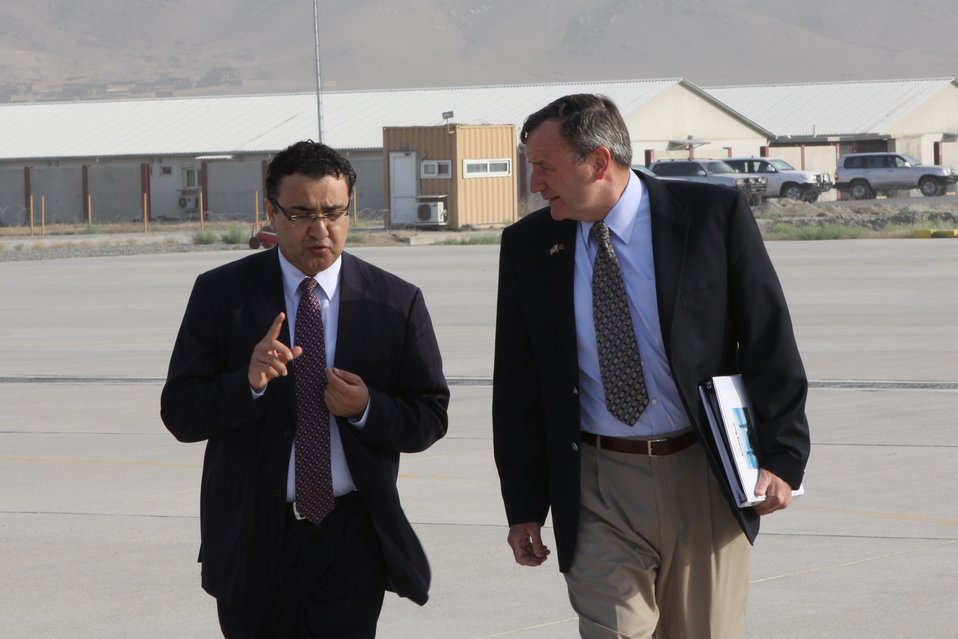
100525 Hirat Marble Conference 005